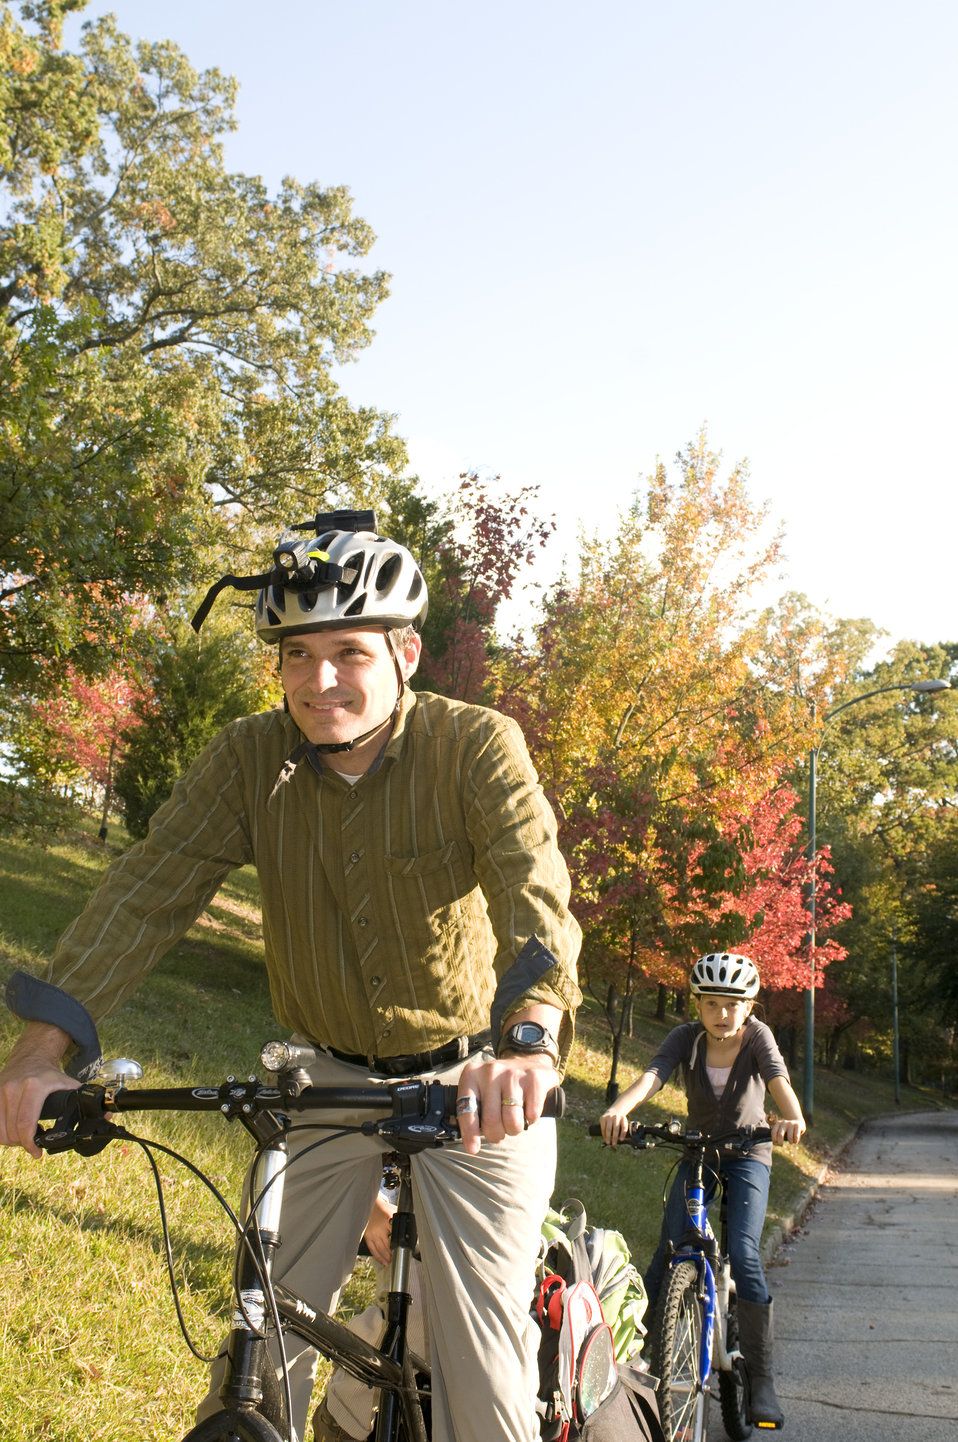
Protective measures having been taken by a careful father, this dad and his two young children were on their way, as they embarked on a Georgian bicycle trip. Riding behind her father, the daughter was riding her own bike, while the son, seated in a small child-safe bicycle seat, was riding on the same bike as dad. All three were wearing aerodynamic safety helmets, and clothing to protect them from the sun, wind and insects. The only thing missing, was a piece of outerwear, which was very bright in color, allow for a greater degree of rider visibility.